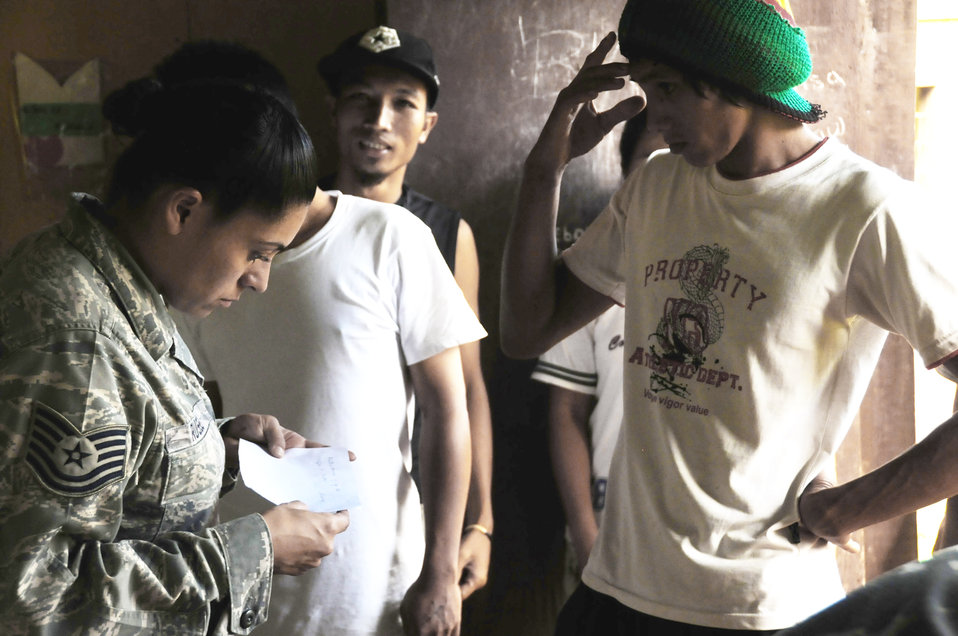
American surgical team making a difference in southern Philippines

Tech. Sgt. Sally Russo assists patients by helping to fill prescriptions at a Medical Civic Action Project Nov. 28 at Jolo, Philippines. More than 200 patients received free check-ups, prescriptions, toiletries, and 10 residents received tooth extractions. Sergeant Russo is an operating room technician assigned to Joint Special Operations Task Force-Philippines Forward surgical team.